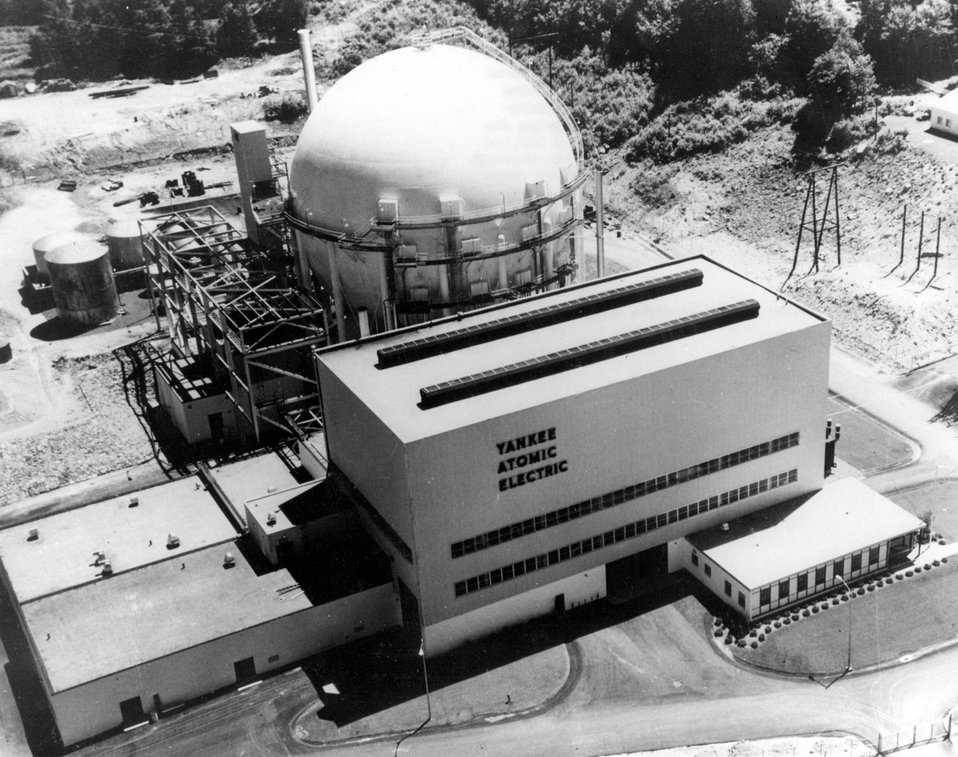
Yankee Atomic Electric. First electrically generating plant to be built under the Atomic Energy Commission's Power Demonstration Reactor Program (PDRP) was Rowe located on the Deerfield River in northwestern Massachusetts. Circa 1966.